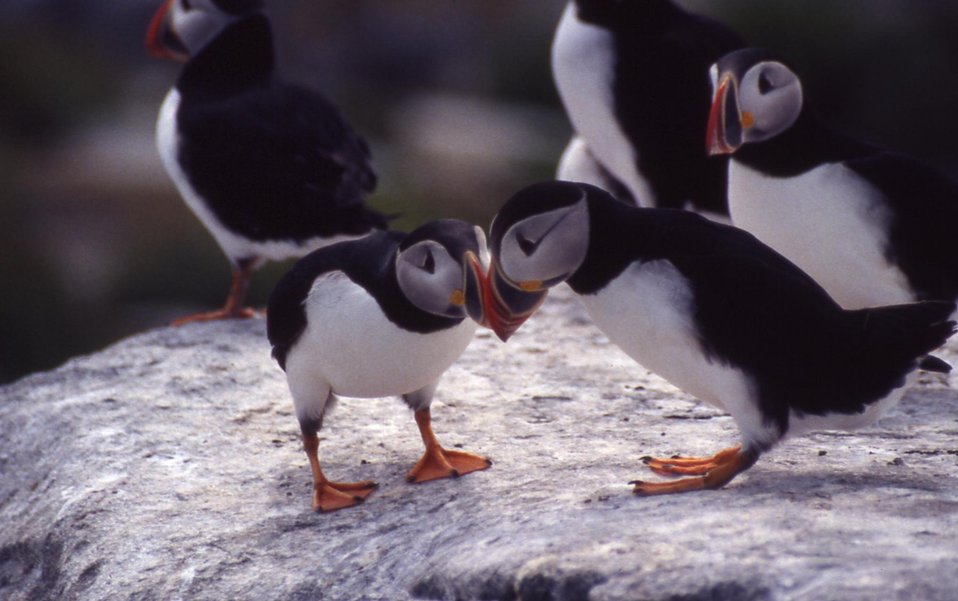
Atlantic puffins courtship billing at Maine Coastal Island National Wildlife Refuge